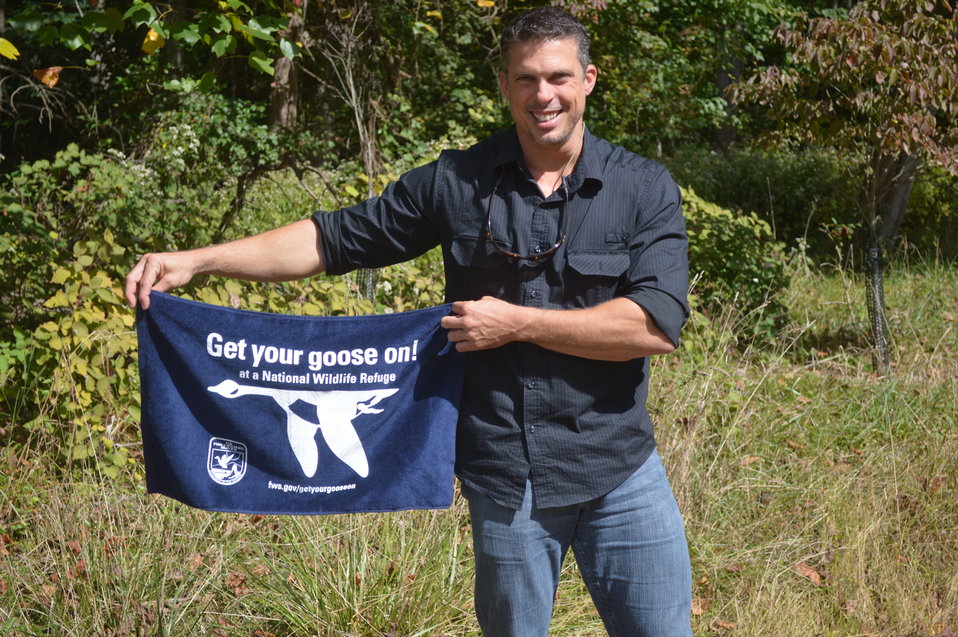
Get Your Goose On!

Photo taken at the National Conservation Training Center in Shepherdstown, WV.

Credit: Ryan Moehring / USFWS

#GetYourGooseOn